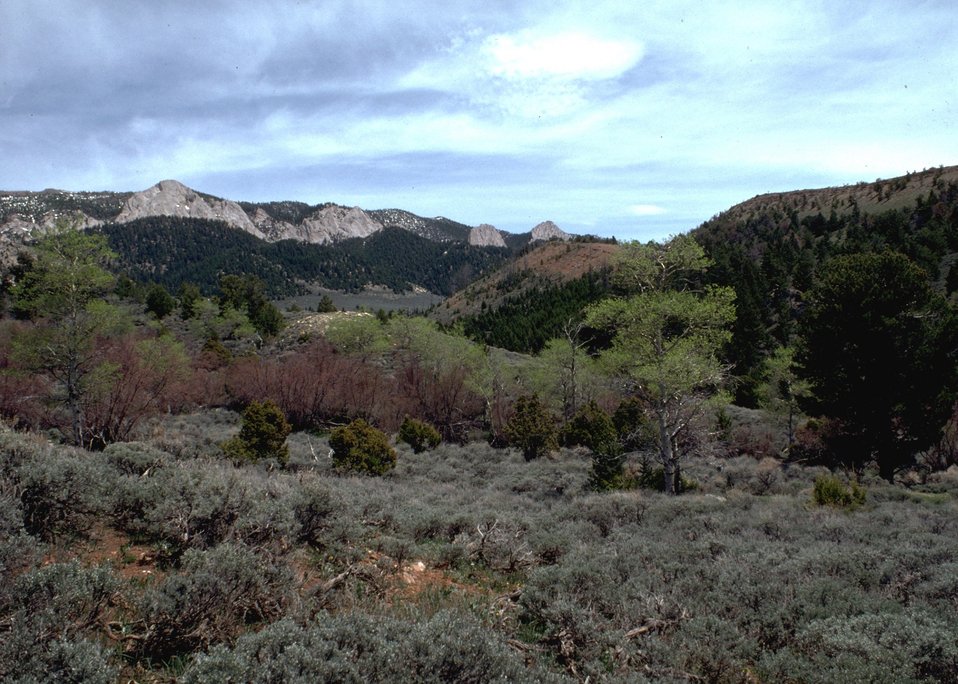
Scenic view of mountain site.